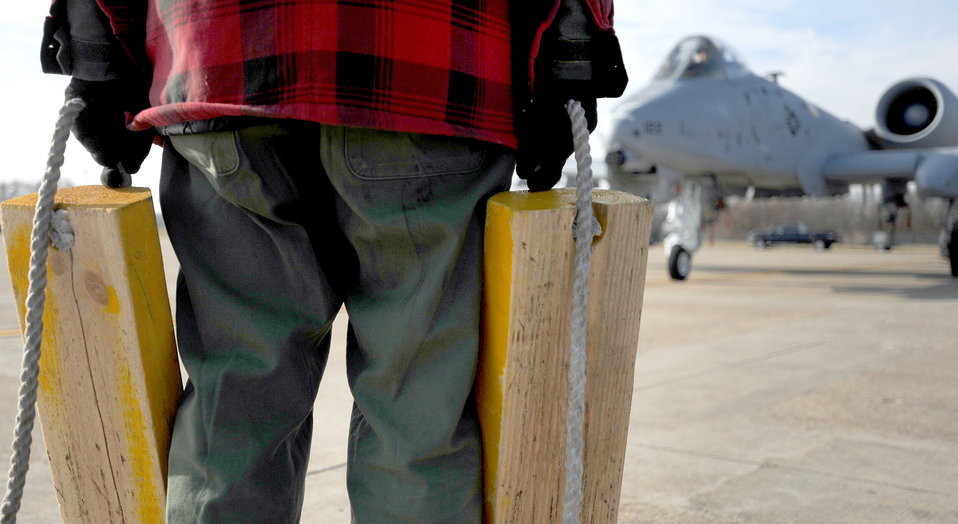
Hot pit refueling

Dewayne Magnuson prepares to put chocks in place during a hot pit refuel for an A-10 Thunderbolt II Dec. 8, 2010, at Whiteman Air Force Base, Mo. Hot pit refueling is a procedure usually performed in a combat situation to rapidly refuel aircraft while their engines are running to thrust pilots back into the fight. Mr. Magnuson is an air reserve technician with the Air Force Reserve Command's 442nd Fighter Wing.